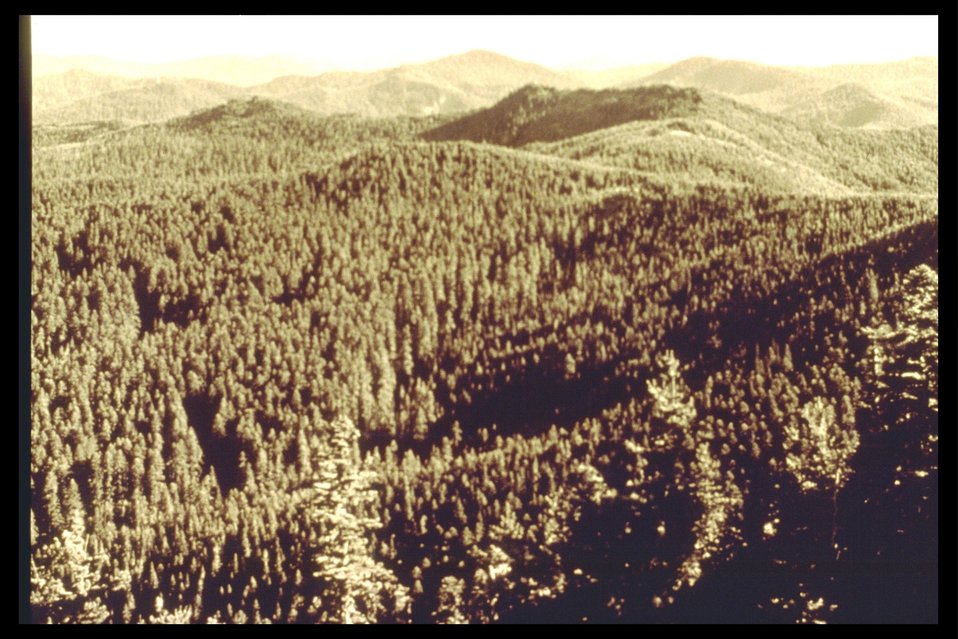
Black and white photo of O & C forest.